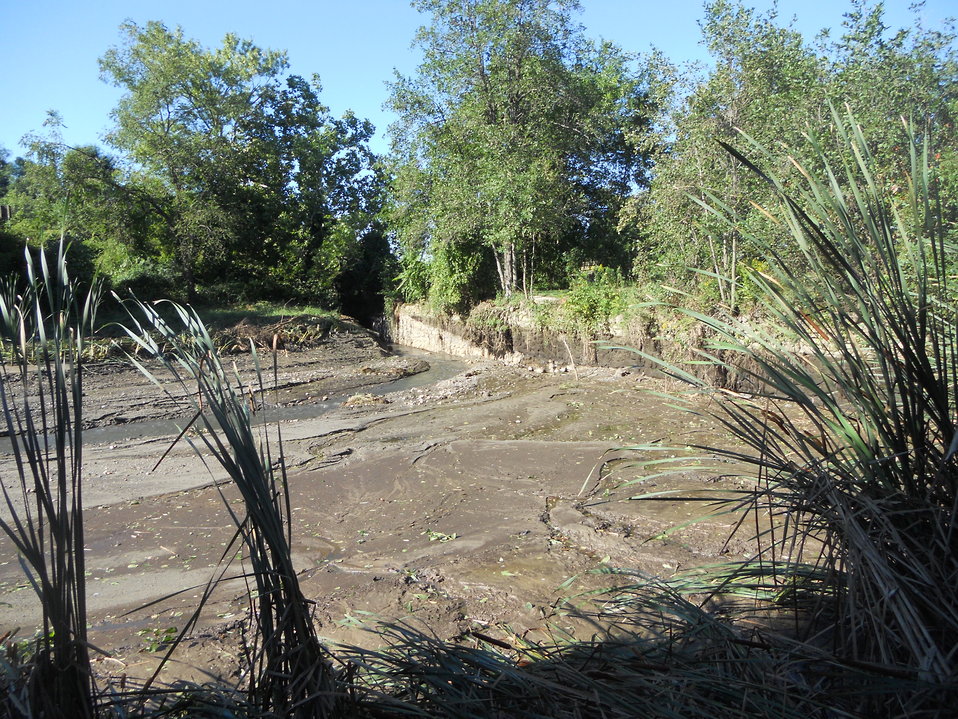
Wallkill River National Wildlife Refuge, Sussex NJ

Dagmar Dale Trail. Meagan Racey/USFWS